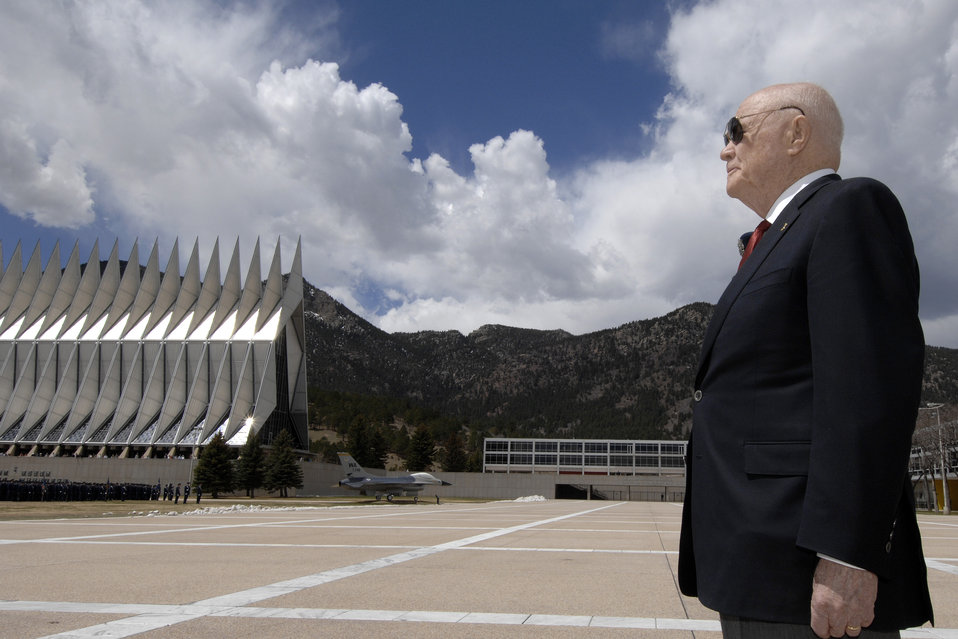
Academy honors Senator Glenn

Sen. John Glenn stands on the U.S Air Force Academy's terrazzo April 22 where he was honored during a ceremony as the recipient of the 2008 Thomas D. White National Defense Award.